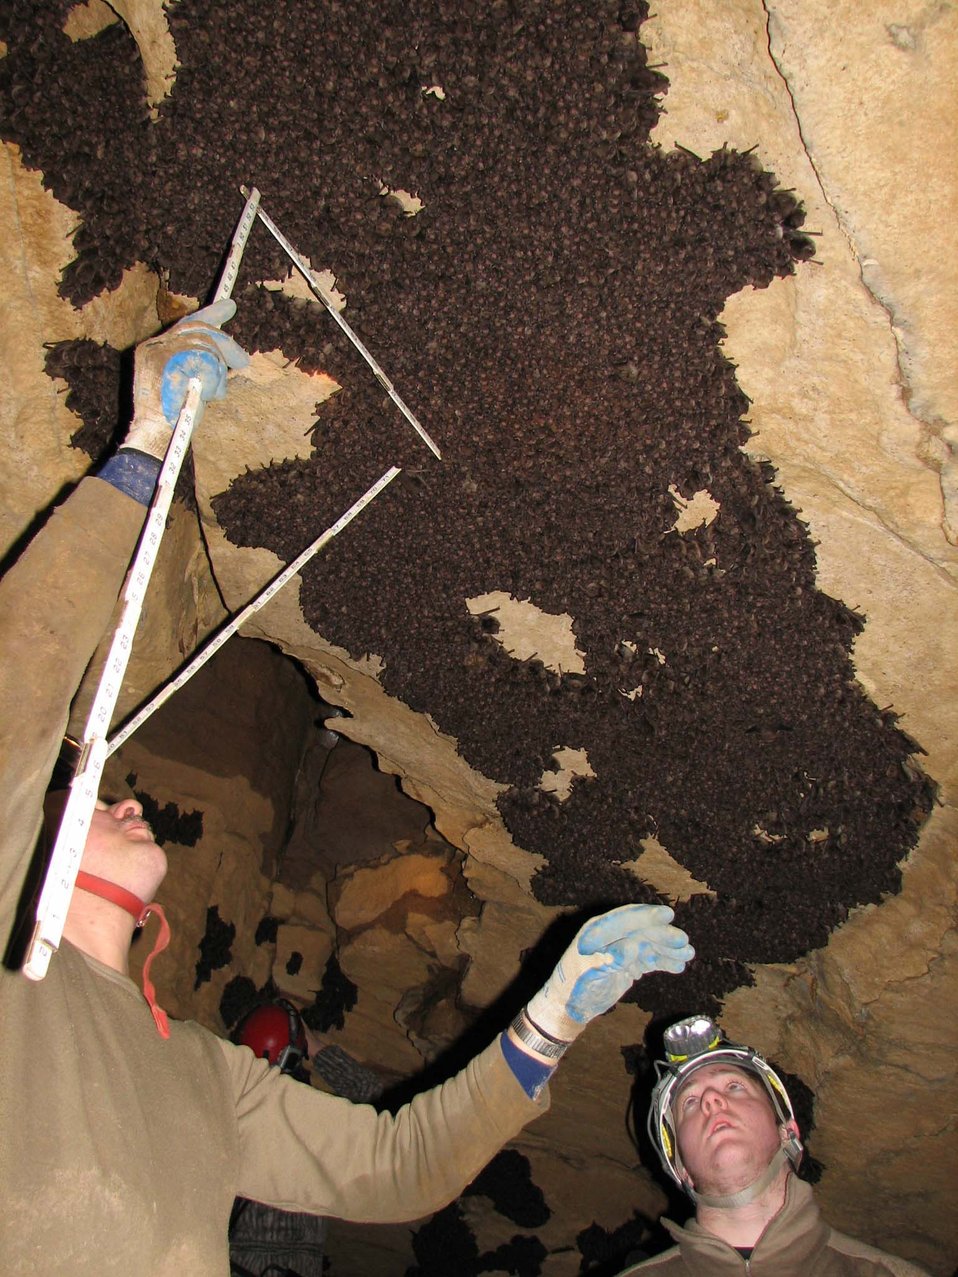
Indiana Bat Survey

Indiana bat (Myotis sodalis) survey in 2007.
Credit: USFWS; Andrew King

By measuring the area of clustered bats, biologists estimate the numbers of hibernating bats.